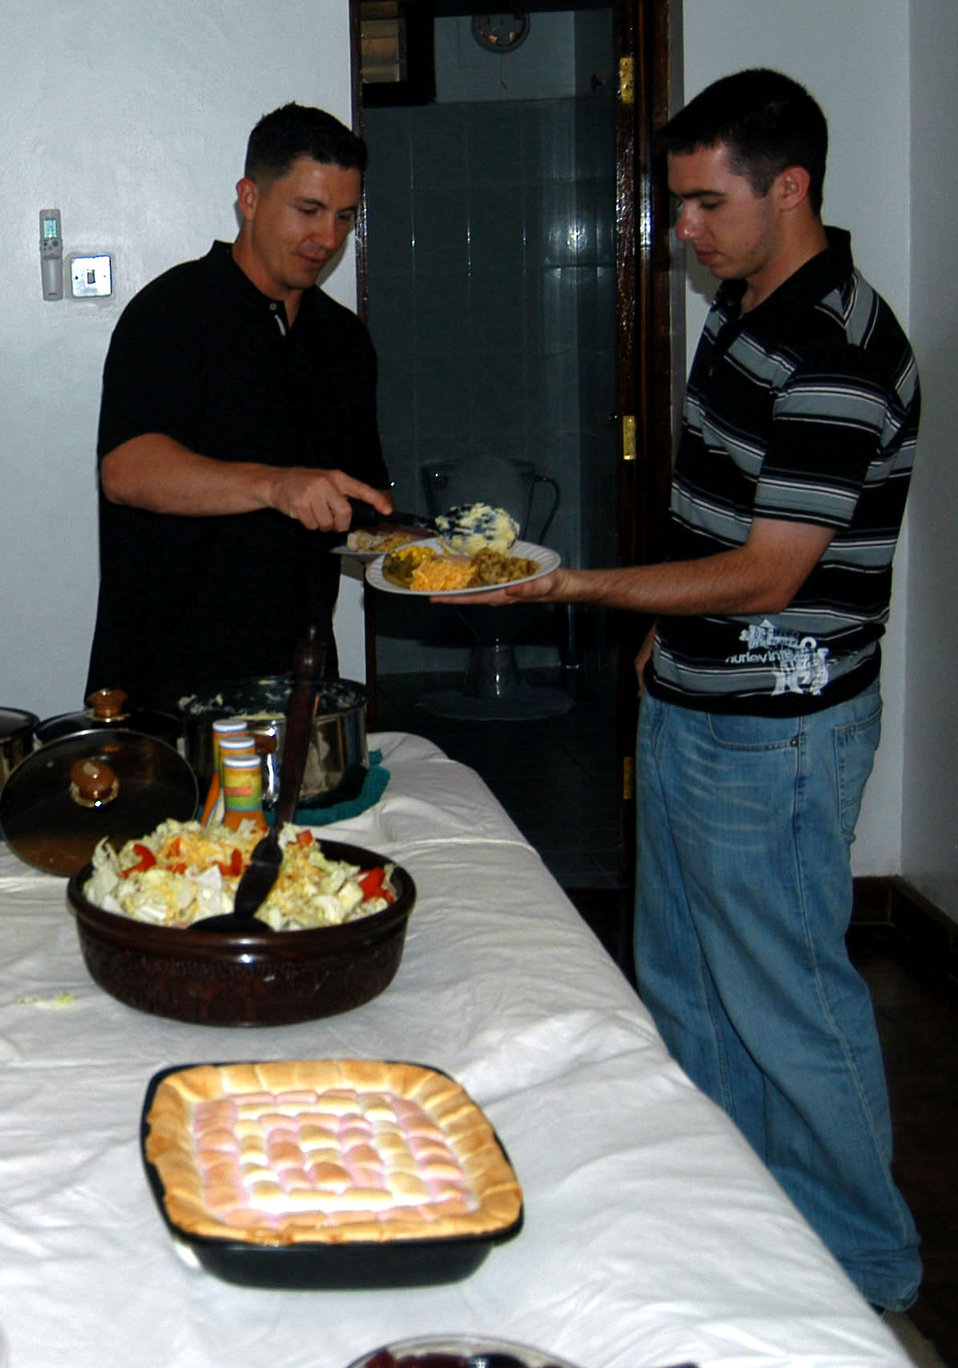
Ministry support team visits troops in Tanzania

Navy Chief Religious Programs Specialist Wayne M. George (left) piles on some traditional Thanksgiving foods onto Army Spc. Michael R. Johnston's plate at the house of a servicemember assigned to the U.S. Embassy in Tanzania who invited more than 20 people to his house to celebrate the holiday. Mr. George, a Bloomfield, N.M., native, is the Chaplains Department senior enlisted leader assigned to the Combined Joint Task Force-Horn of Africa. Specialist Johnston, a Tulsa, Okla., native, is a civil affairs specialist assigned to Civil Affairs Team 11 of C Company, 486th Civil Affairs Battalion.